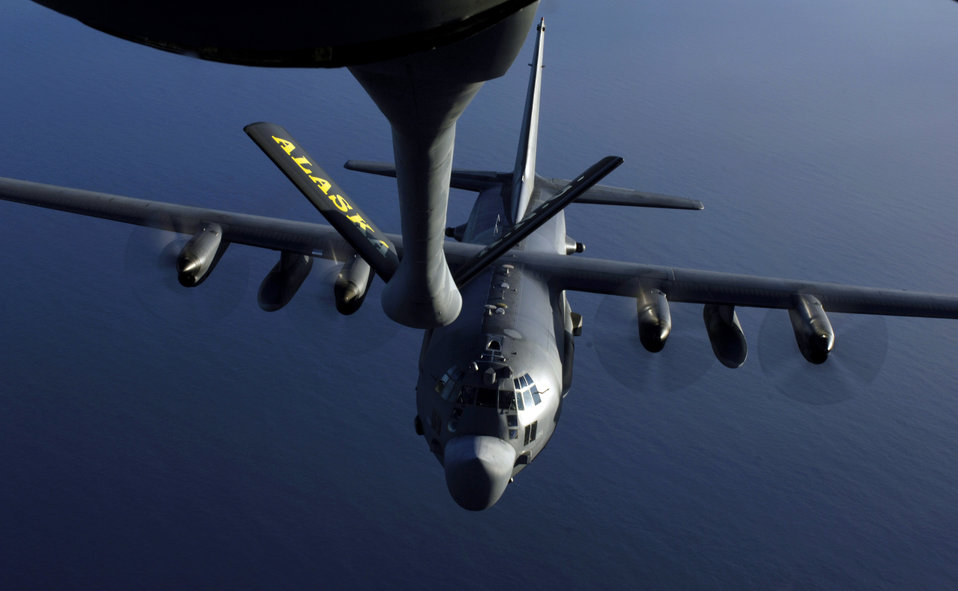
Refuel over the Pacific

ANDERSEN AIR FORCE BASE, Guam (AFPN) -- An MC-130 Combat Talon approaches a KC-135 Stratotanker for refueling. The KC-135 is from the 168th Air Refueling Squadron, Alaska Air National Guard. The 168th is deployed to Andersen as part of the Air and Space Expeditionary Force rotations and is supporting all U.S. aircraft in the Pacific.